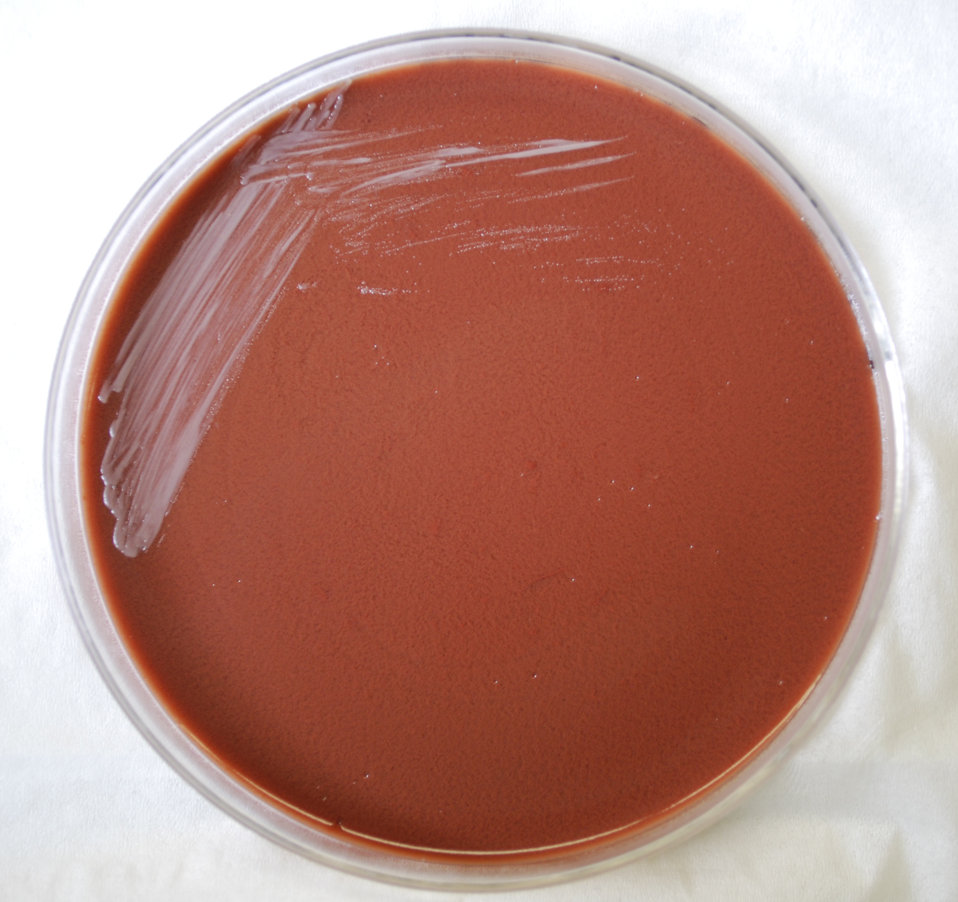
This photograph depicts the colonial morphology displayed by Gram-negative Brucella abortus bacteria, which was grown on a medium of chocolate agar, for a 48 hour time period, at a temperature of 37�C, while incubated in a CO2 incubator. For a closer view of these bacterial colonies, see PHIL 12232.How is brucellosis transmitted to humans, and who is likely to become infected?